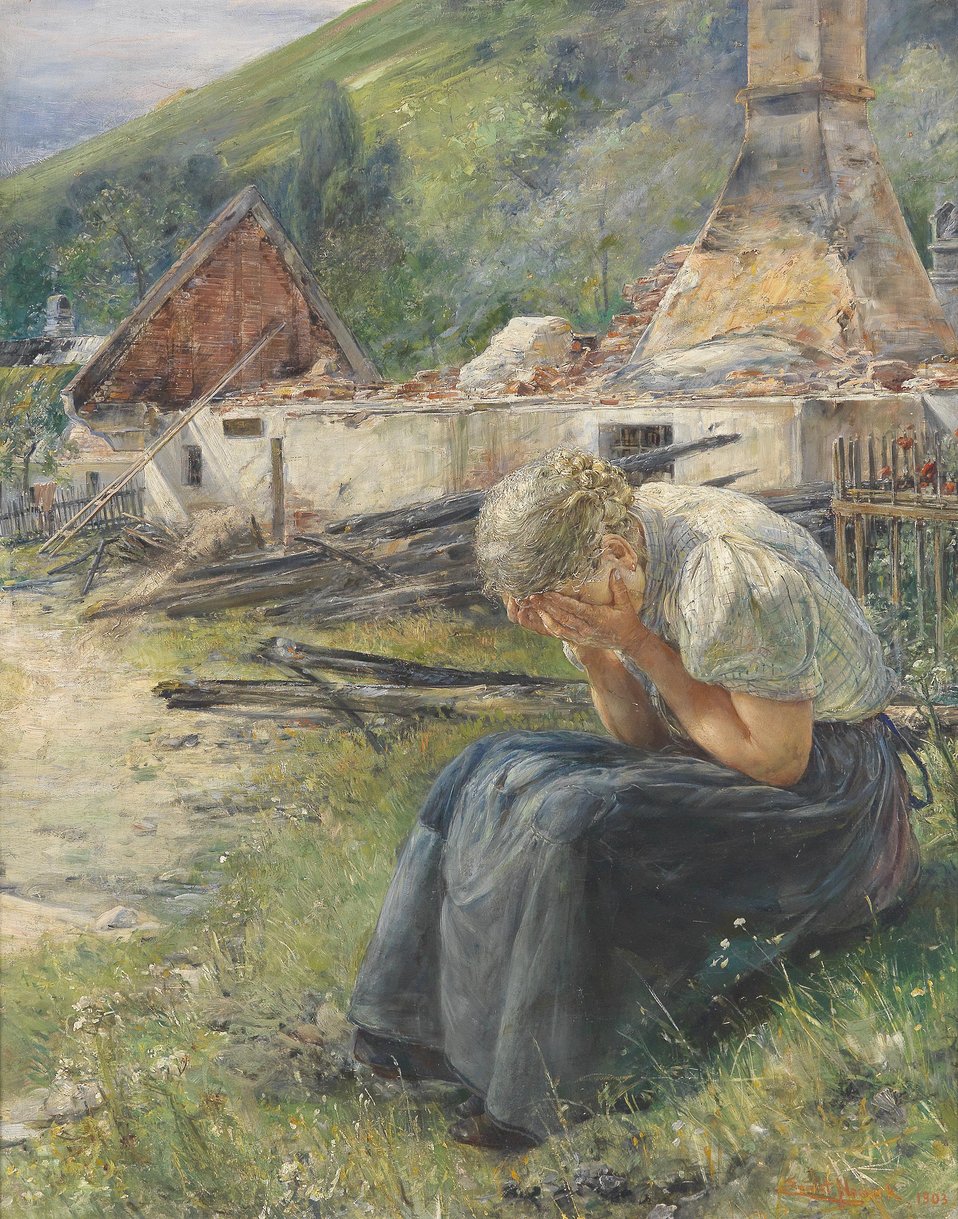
Am Tag danach, signiert, datiert Ernst Nowak 1903, Öl auf Leinwand, 63,5 x 50,5 cm